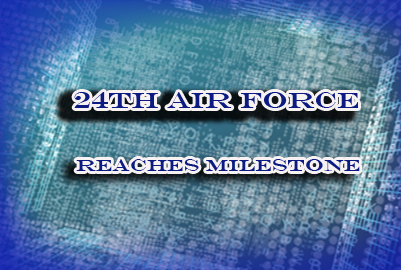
24th AF

Twenty-fouth Air Force declared ready for full operations